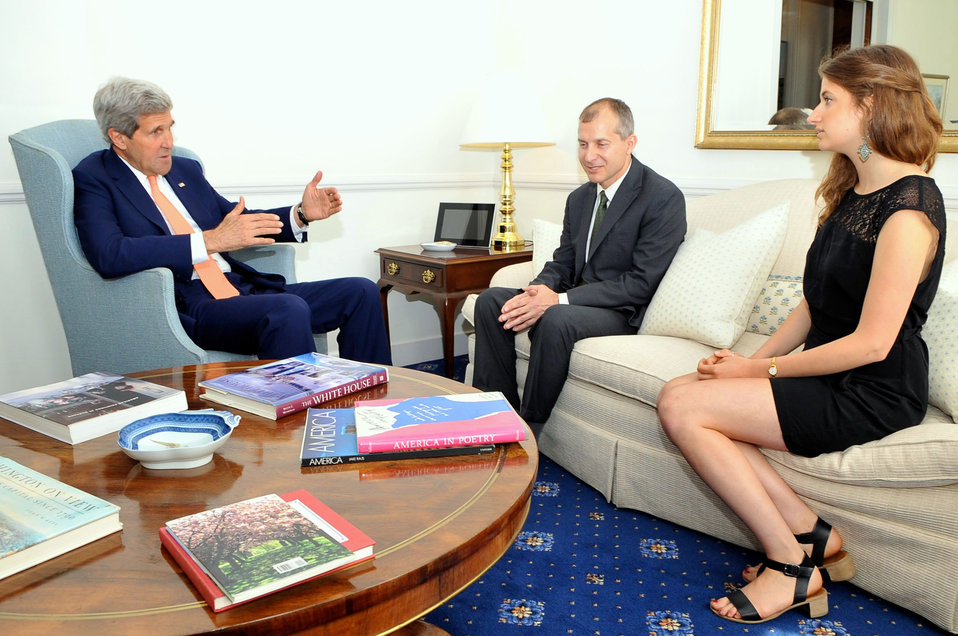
Secretary Kerry Speaks With Wounded Foreign Service Officer Lodinsky Upon Reunion in London

U.S. Secretary of State John Kerry speaks with Foreign Service Officer Jeff Lodinsky, who was wounded in Afghanistan and first met by the Secretary two days after he was sworn in, and his daughter Reka, who is working at Embassy London this summer, before the Secretary addressed employees at Embassy London on June 13, 2014.